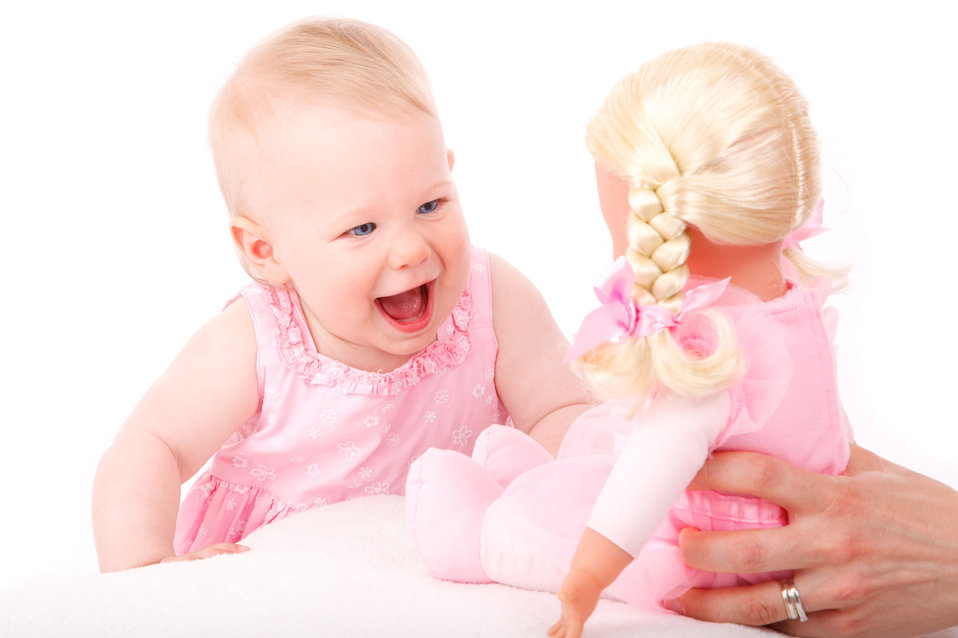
Baby and doll

Baby girl looking and smiling at a doll isolated on white background.